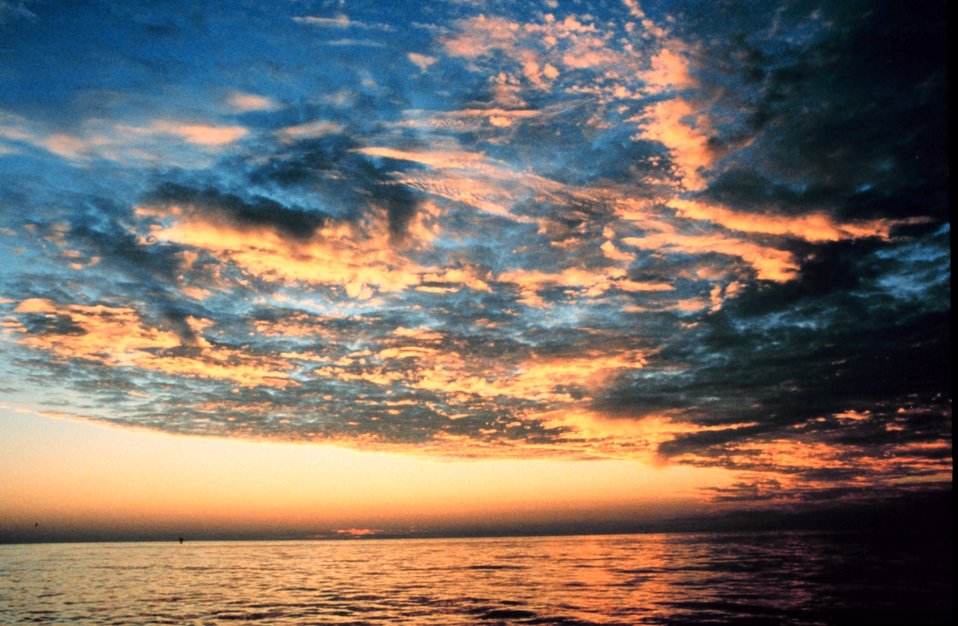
Sunset in Gulf of Mexico